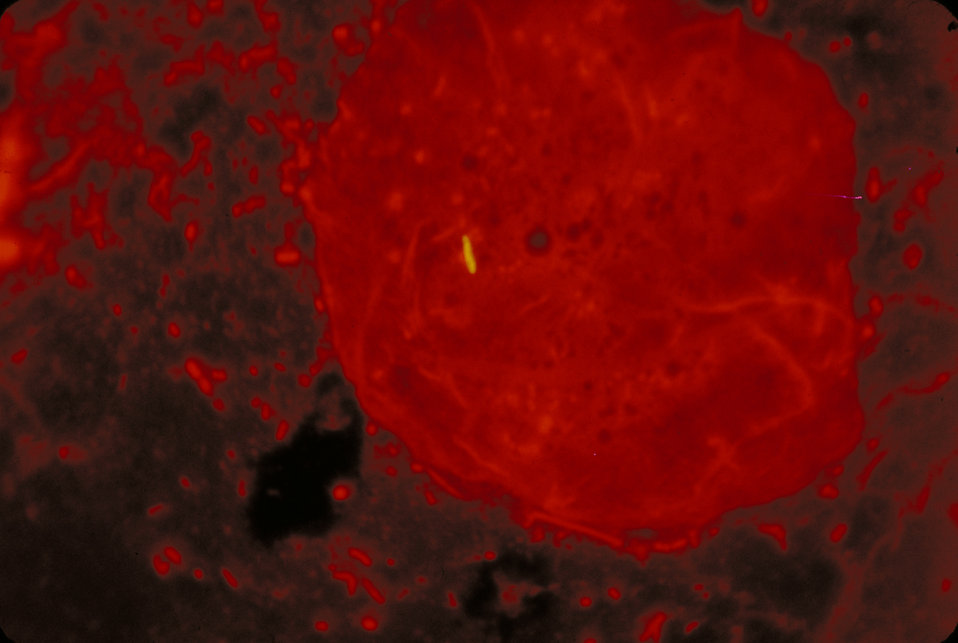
Mycobacterium tuberculosis in a sputum smear is stained using fluorescent auramine with acridine orange counterstain.